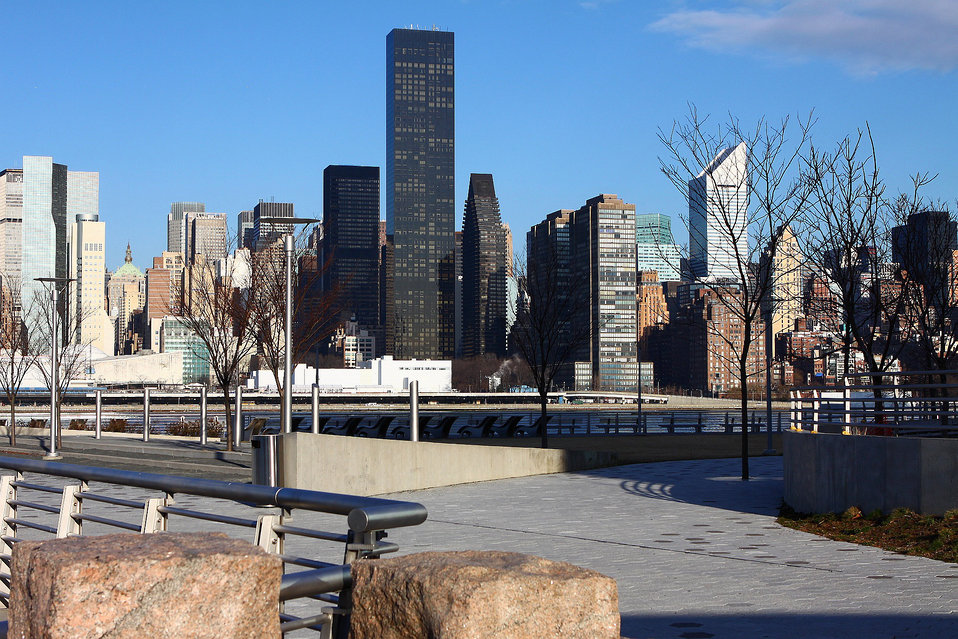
Midtown skyline

Beautiful morning by east river.